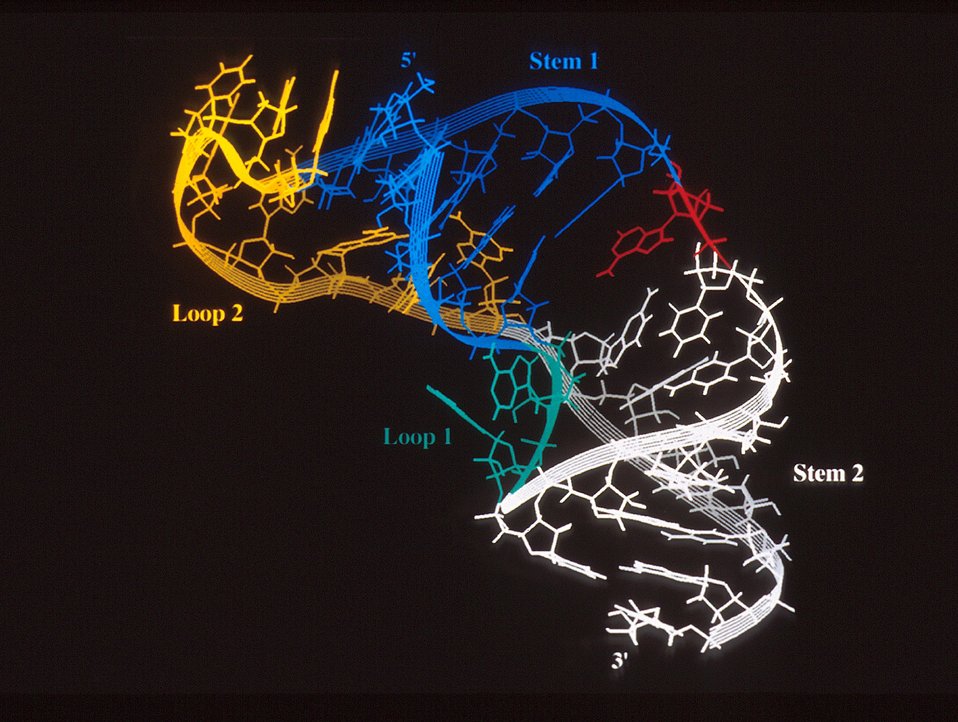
DOUBLE LOOPED STRAND OF RNA FORMING A PSEUDOKNOT WITH A BEND SHOWN IN RED.

LBL CHEMISTS (STRUCTURAL BIOLOGY DIV.) PRODUCED THE FIRST THREE DIMENSIONAL IMAGE OF AN RNA STRUCTURE SHOWING THE PRESENCE OF ADENOSINE (RED) BETWEEN THE TWO STEMS OF THE PSEUDOKNOT CREATING A BEND IN THE PSEUDOKNOT'S SHAPE THAT HELPS RETROVIRUSES REPRODUCE WITHIN THE INVADED CELL. WITHOUT THE ADENOSINE THERE IS NO BEND, AND THE RETROVIRUS CANNOT REPRODUCE. THE MOST NOTORIOUS RETROVIRUS UNDER STUDY IS HIV.